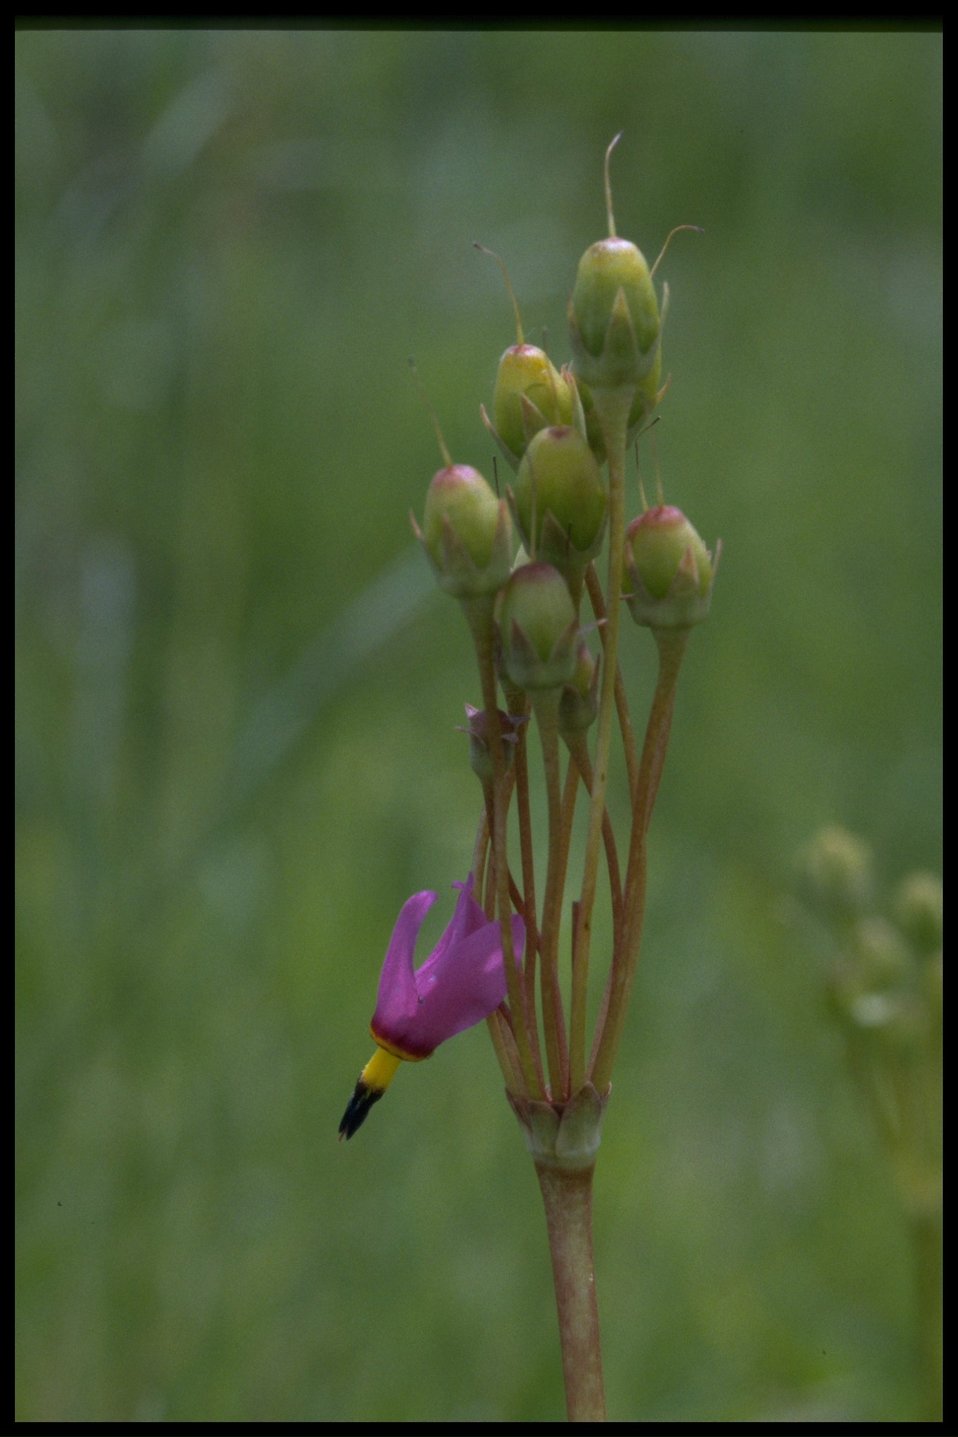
Closeup shot of Shooting Star flower and fruit.